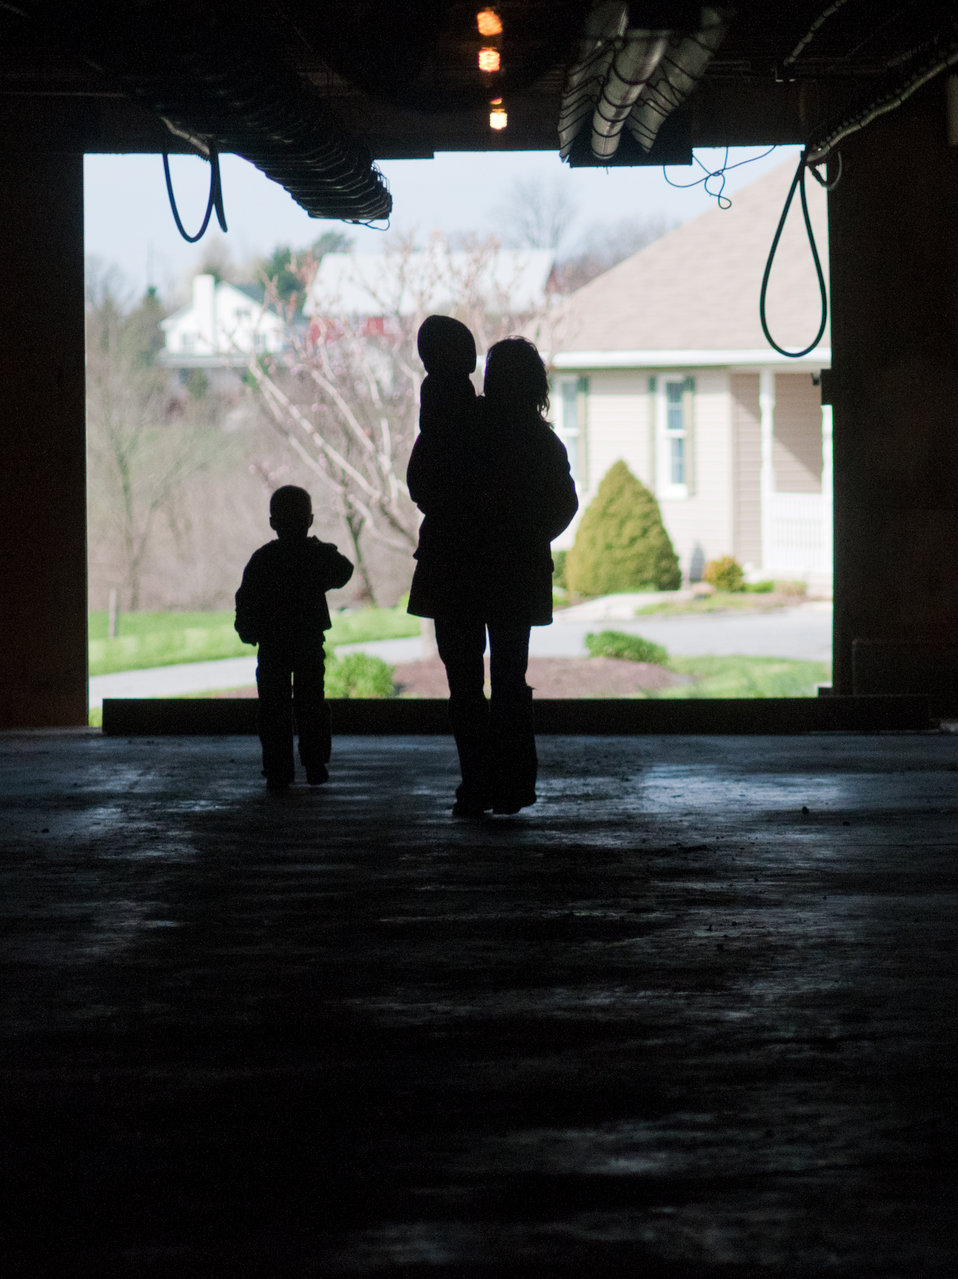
Roxanne Molnar carries Gavin (2) while Grant (5) walks with them out of a chicken house to their home ahead on April 21, 2011. Roxanne and Matthew Molnar have an 80,000 poultry farm, in Grantville, PA and were recipients of a $20,000 Rural Energy for America Program (REAP) grant. The money is a portion of the cost to modernize the second of two 40,000 chicken capacity chicken houses. Gavin (2, right) and Grant Molnar (5, left) use a shovel to scour the floor for debris at the Roxanne Molnar Farm on April 21, 2011, in Grantville, PA. Roxanne and Matthew Molnar have an 80,000 poultry farm and were recipients of a $20,000 Rural Energy for America Program (REAP) grant. The money is a portion of the cost to modernize the second of two 40,000 chicken capacity chicken houses. Chickens need to be kept at a comfortable temperature to remain productive. New radiant heaters keep the chickens warm during Pennsylvania winters. On warm days, ceiling vents provide passive venting of heat out of the building; when chicken house temperatures are estimated to be above 90 degrees, fans come on, pulling air through water evaporator elements lowering air temperature down 10-15 degrees and flows along the chicken house's length, in effect a tunnel of cooled air. The benefits to the chickens are heat and excess moisture removal; minimized dust and odor; limits buildup of ammonia and carbon dioxide; and provides oxygen for respiration. All these systems are computer controlled allowing owner, Roxanne Molnar to run the farm by herself and raise two small boys Gavin (2) and Grant (5). Husband, Matthew works off the farm and frequently travels, so along with the demands of parenting and manually controlling fans, vents, and having to remove the 80,000 chickens from their feeders and moving them around to cool them was an increasingly daunting task. The computer controls of the new system automate many of the daylong tasks allowing the Molnar’s to run their family farm. USDA Photography by Lance Cheung.